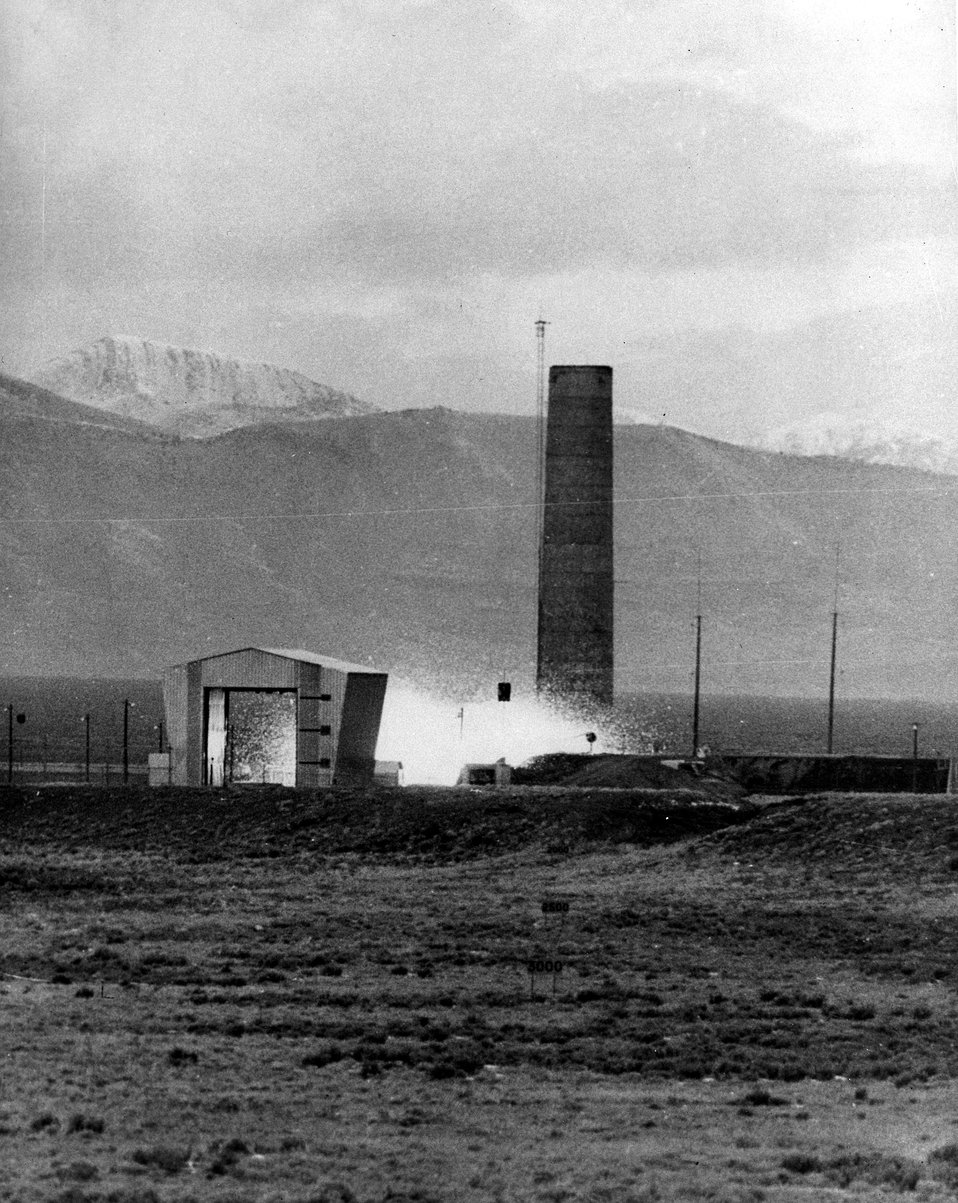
On January 11, 1966, a SNAP 10A type reactor was deliberately destroyed at the National Reactor Testing Station in Idaho to provide kinetic data.